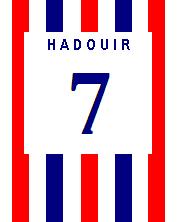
Fran√ßais†: maillot football shirt Deutsch: Fussballtrikot